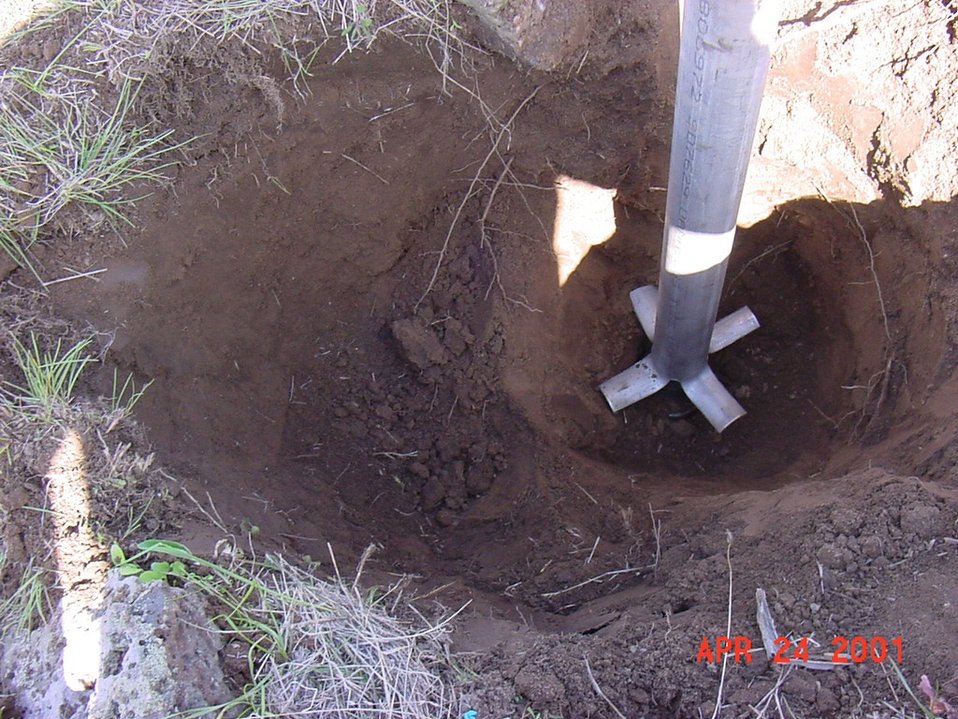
Cadastral Surveys Idaho Bureau of Land Management